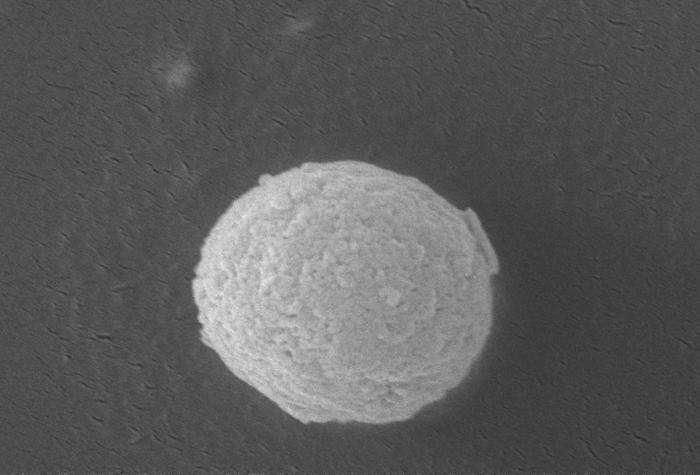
This scanning electron micrograph (SEM) revealed some of the ultrastructural features seen on the surface of an Acanthamoeba polyphaga protozoan. This particular amoeba displayed a rather smooth exterior, though it has the ability to project pseudopodia, from the Latin pseudo = false, and podia = feet, from the organism's surface, which enable the amoeba to move about, and grasp objects in its environment.